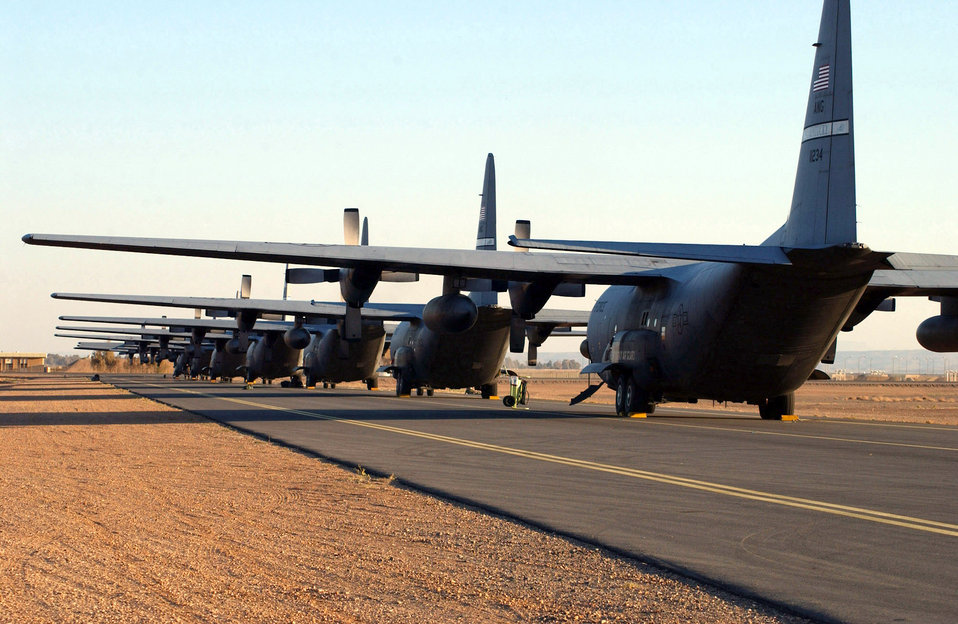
Hercules row

OPERATION IRAQI FREEDOM (AFPN) -- A row of C-130 Hercules from the 485th Air Expeditionary Wing are parked at a forward-deployed location in Southwest Asia. Seven C-130 units combined here to form the largest collection of the aircraft in the world, according to officials.